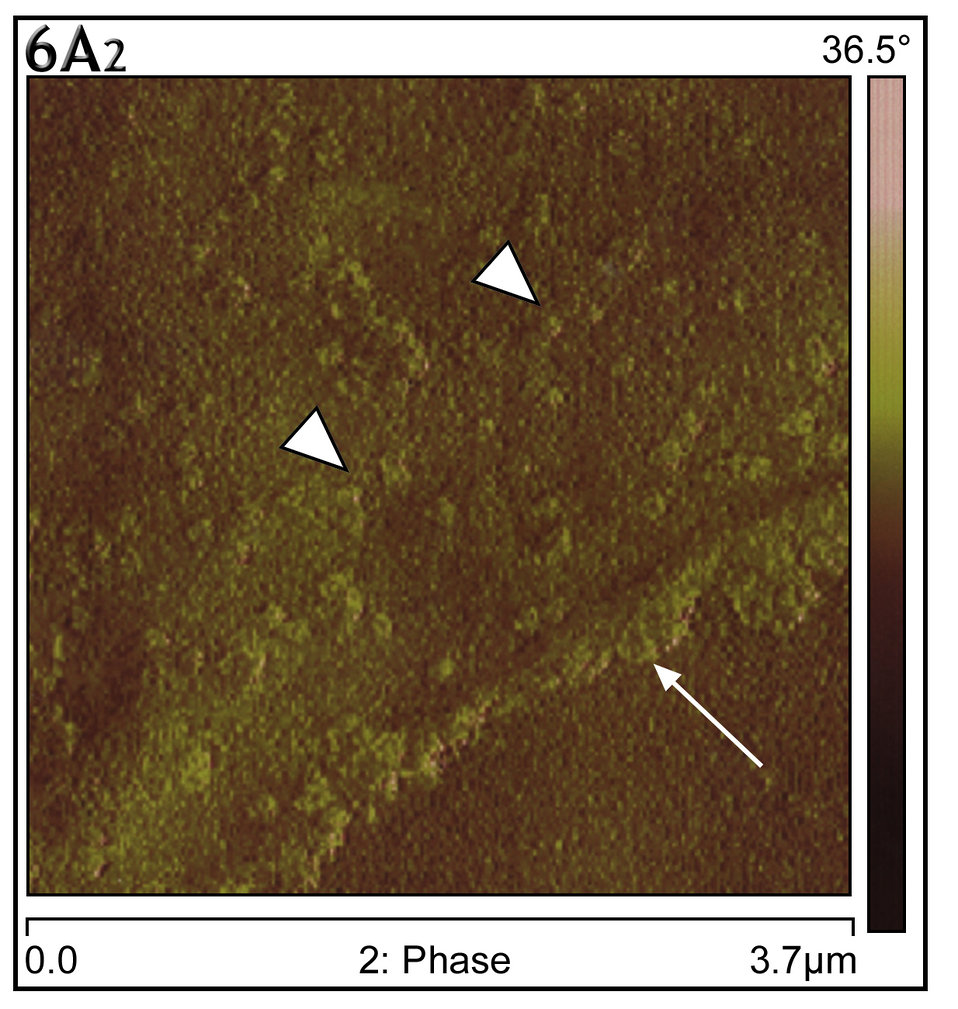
This atomic force micrograph of SARS infected Vero E6 culture cells revealed virus extrusion at the thickened plasma membrane.